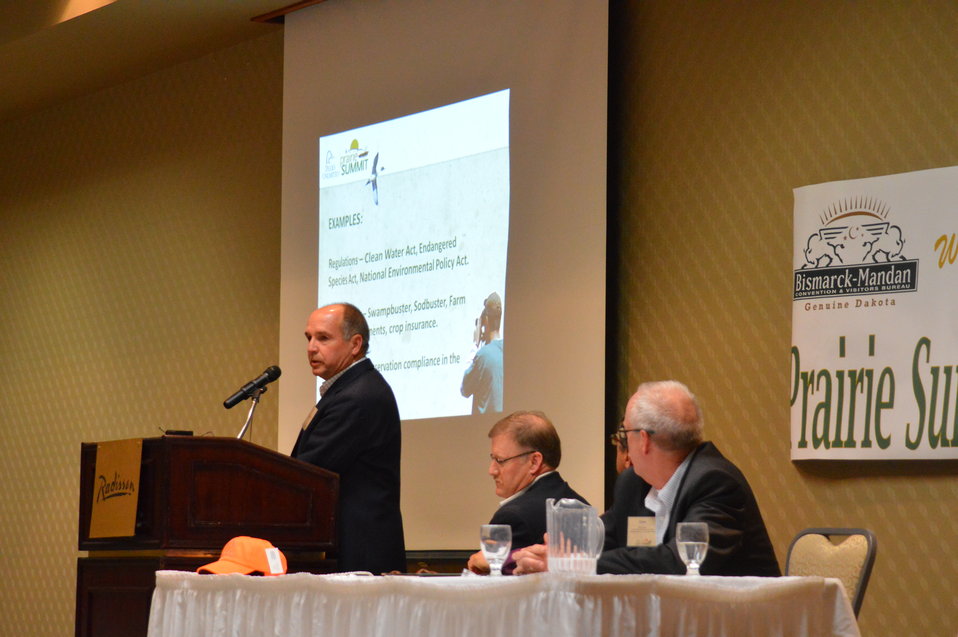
Jim Ringelman speaks at the Prairie Summit

Through the efforts of Ducks Unlimited and its partners, a Prairie Summit meeting was held in June 2013 in Bismarck, North Dakota, bringing key stakeholders to the table to identify and begin to address the immediate needs of the overall effort to conserve wetlands and grasslands, as well as bring media attention to the issues at hand and the urgency of the situation.